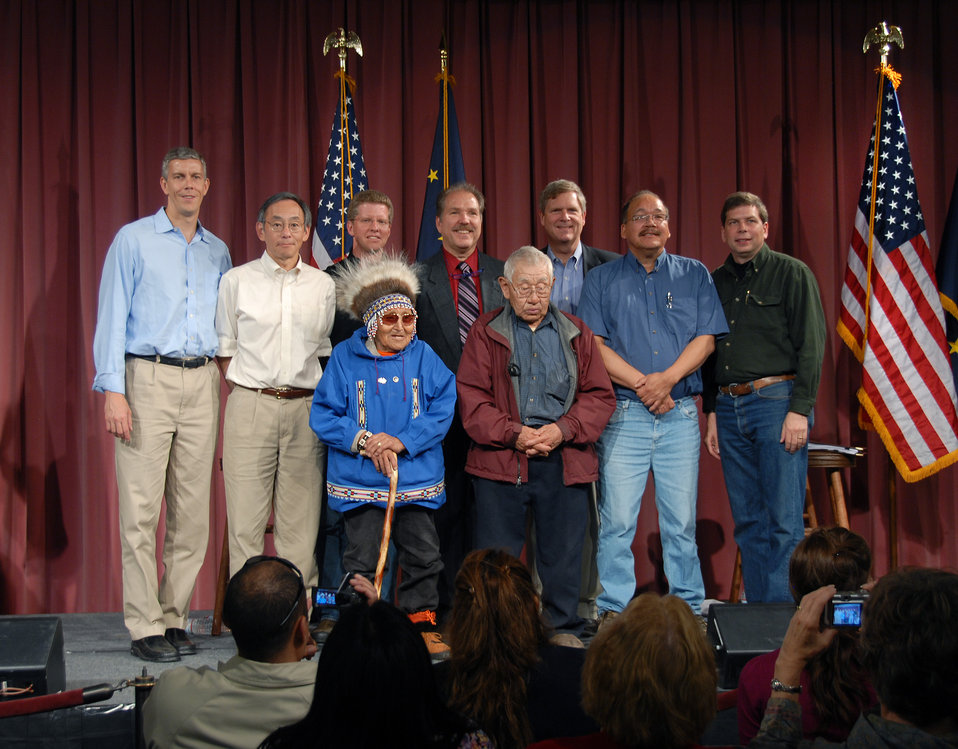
Rural Tour 0198

Rural Tour Alaska Aug 2009